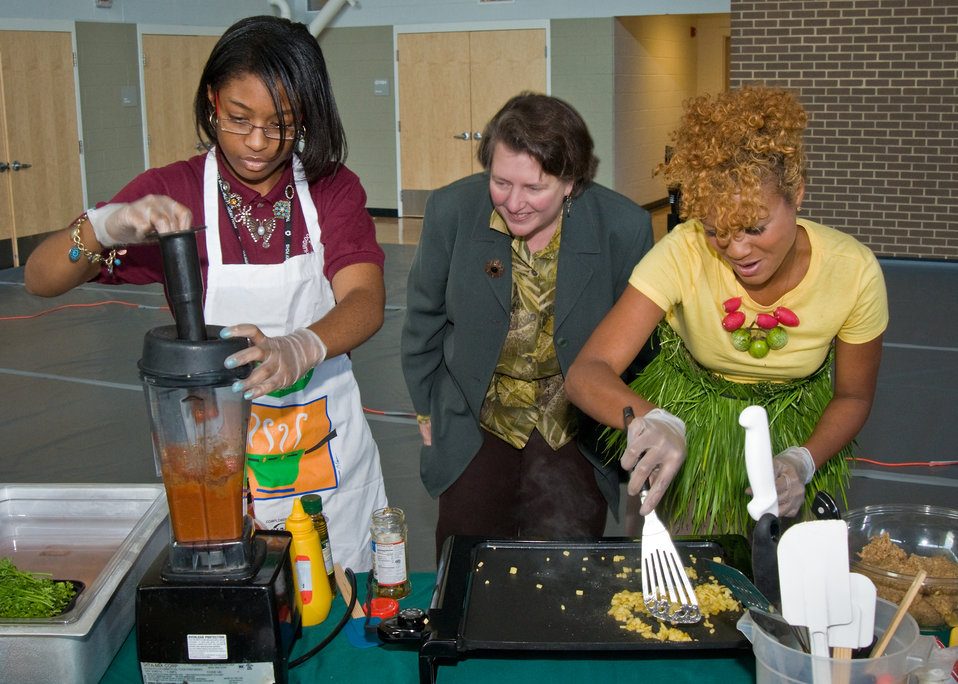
From left: Teasia Capies, a spohomore at Thurgood Marshall Academy, Deputy Secretary Dr. Kathleen Merrigan and Chef Lauren Van der Pool, 'Café Green' and 'Vander der Pool Gourmet' during the Chef Competition at the Savoy Elementary and Thurgood Marshall Academy shared campus in Washington, DC, Tuesday, October 12, 2010. The Chef Competition kicked off the D.C. Farm to School and D.C. School Garden Week. Local chef’s created healthy, delicious recipes using local apple varieties to be judged by the students themselves. School children and a partnership of community organizations have responded to First Lady Michelle Obama’s goal to end childhood obesity by building school gardens, providing healthier foods in school meals, and helping kids connect with local food and agriculture. USDA Photo 10di1522-41 by Bob Nichols.